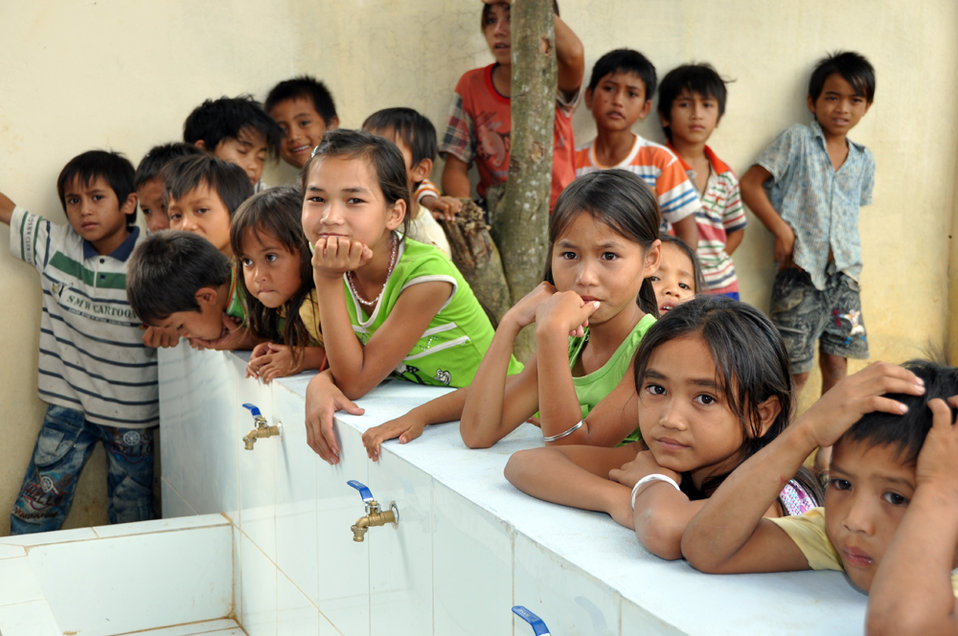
USAID contributes to refurbished pre-schools and teacher training in Vietnam